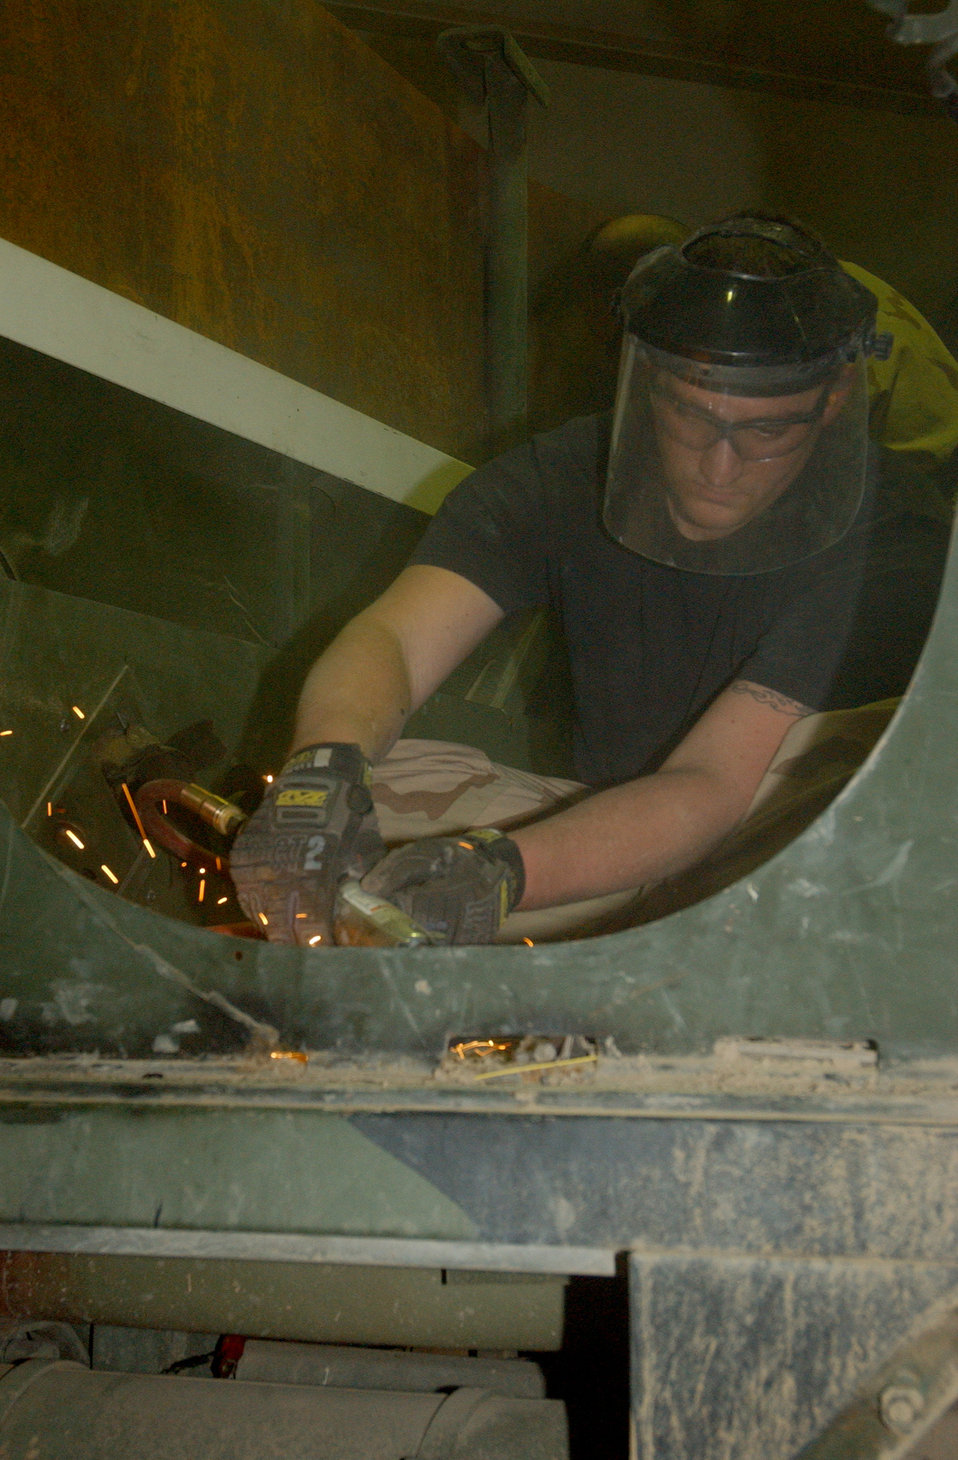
Airmen add armor to Army vehicles

BALAD AIR BASE, Iraq -- Senior Airman Joshua Leuck strips an Army vehicle by grinding rivets off. Once the rivets are gone, armor can be added. Airman Leuck is a 732nd Expeditionary Logistics Readiness Squadron vehicle maintainer deployed from Scott Air Force Base, Ill.